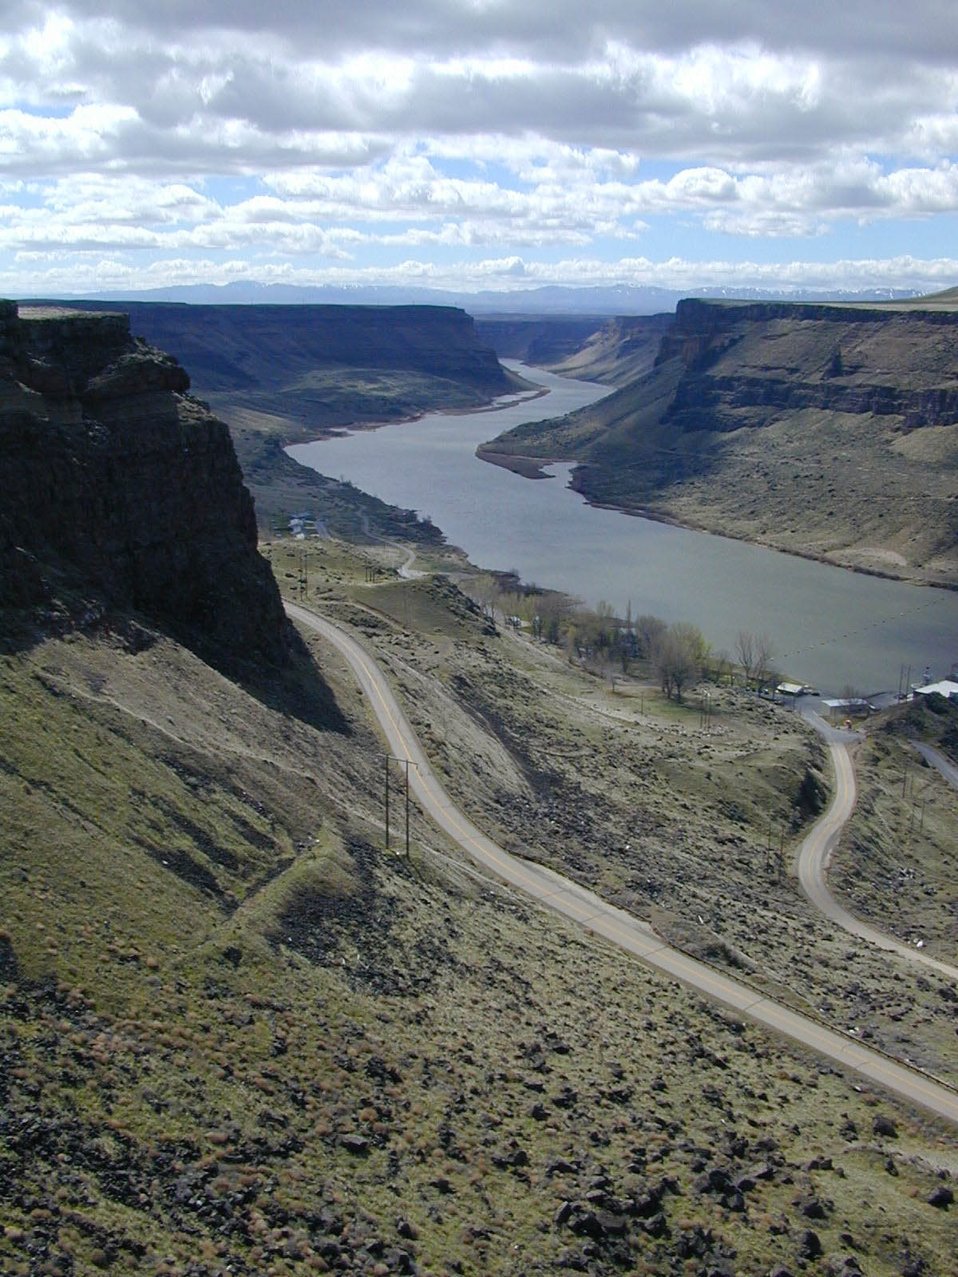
Scenic Snake River Birds of Prey National Conservation Area Lower Snake River District LSRD Snake River Canyon